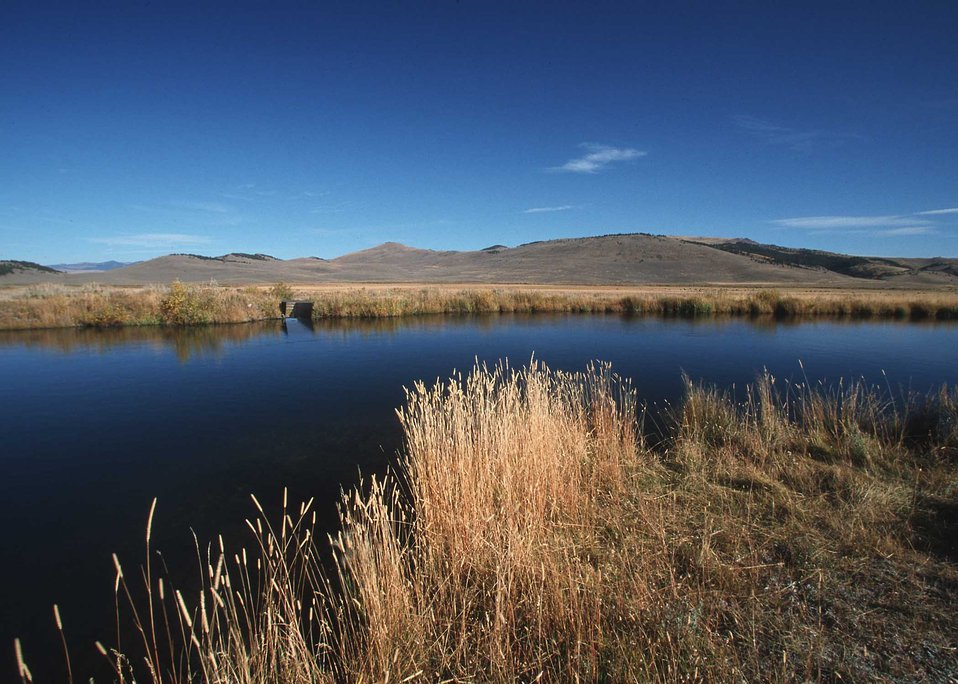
Scenic wetland.